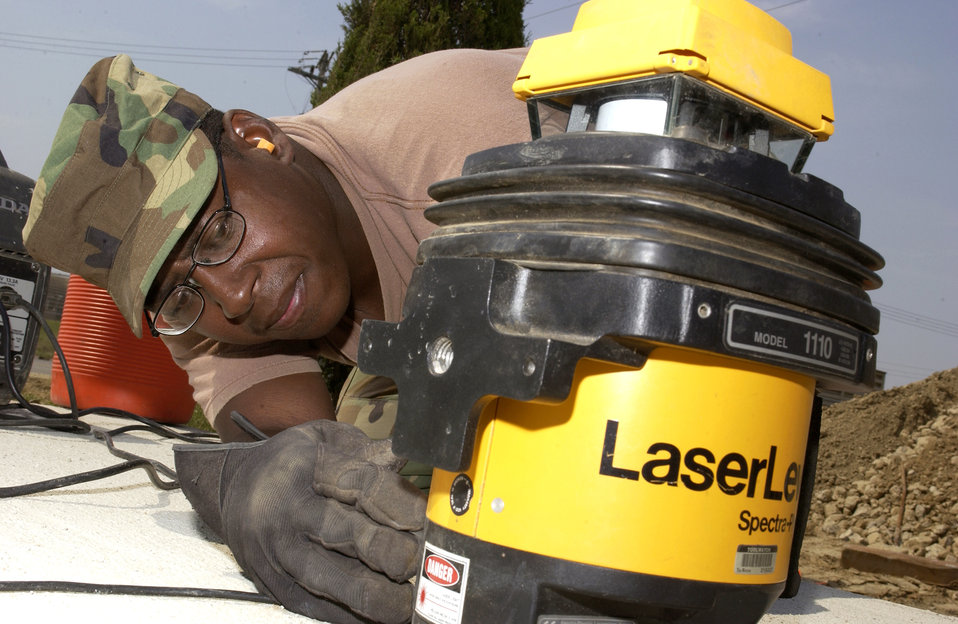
Red Horse squadrons unite in the fight

Tech. Sgt. Karnelius Palmer prepares a leveler before laying concrete at Osan Air Base, South Korea, on Tuesday, May 16, 2006. Airmen from Red Horse squadrons at Nellis Air Force Base, Nev.; Barksdale AFB, La.; Andersen AFB, Guam, and Osan are working through September on various quality-of-life improvement projects in South Korea. Sergeant Palmer is with Barksdale's 307th Red Horse Squadron.